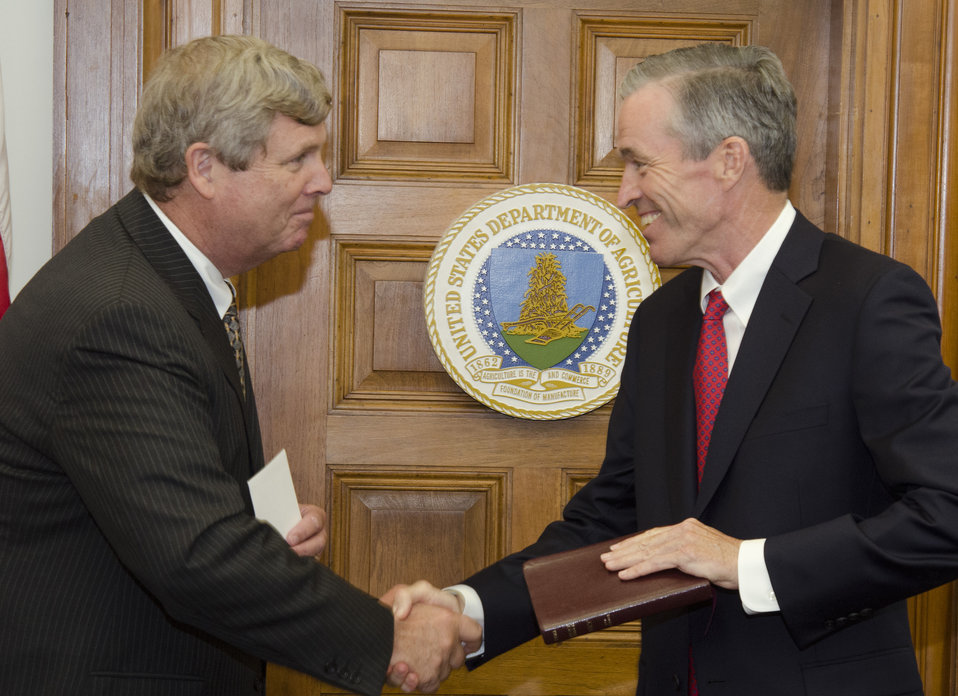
Agriculture Secretary Tom Vilsack swears in Matt McKenna as the Investment and Foundation Advisor at the U.S. Department of Agriculture (USDA) in Washington, D.C. on Tuesday, Jun. 18, 2013.